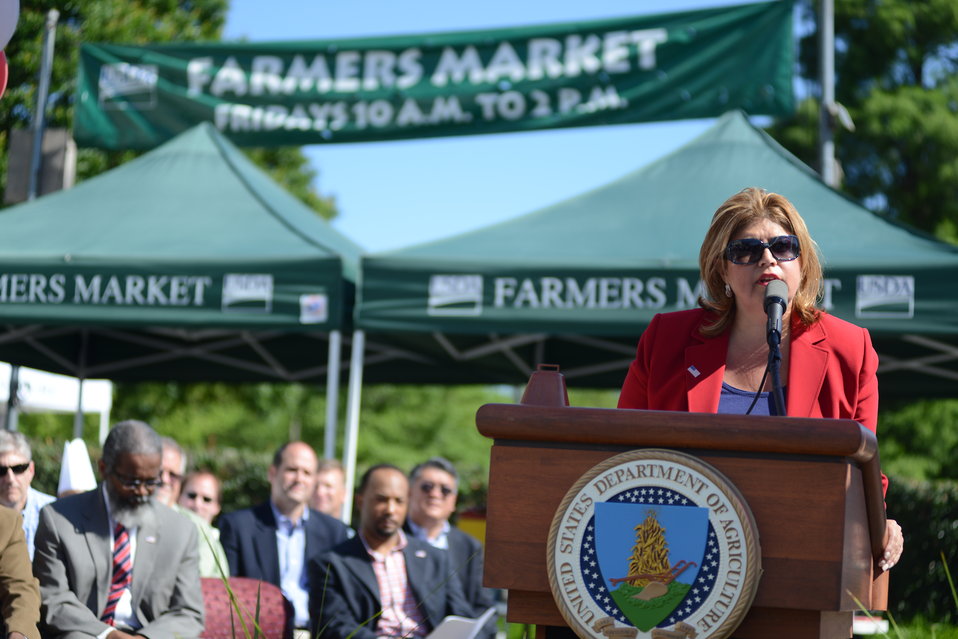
U.S. Department of Agriculture (USDA) Agricultural Market Service (AMS) Administrator Anne Alonzo speaks at the opening of USDA’s 2014 Farmers Market in the east parking lot of USDA in Washington, D.C. on Friday, Jun. 6, 2014.